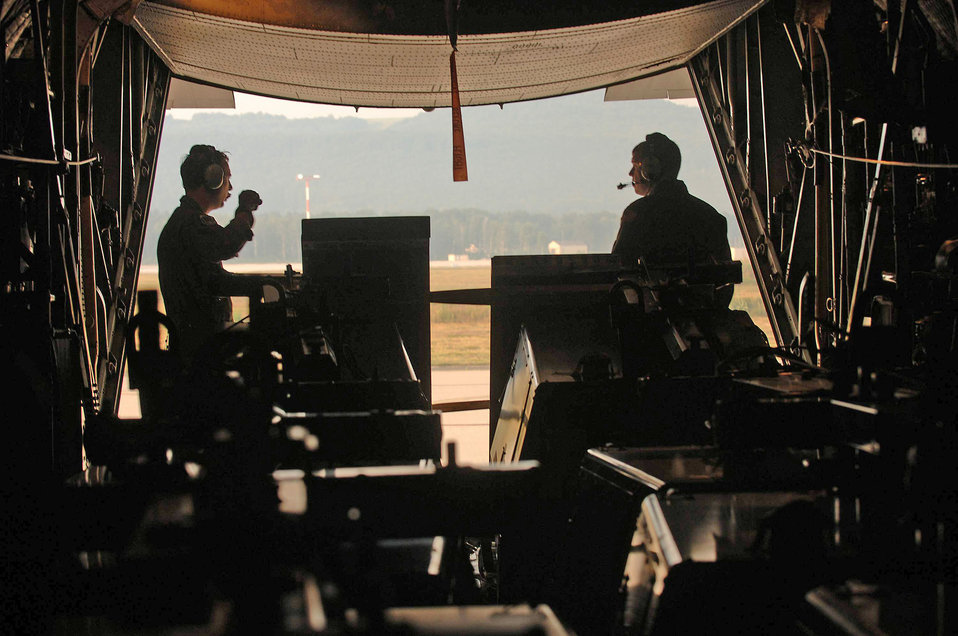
Airmen provide presidential support in Moscow

Staff Sgt. Samuel Yearber and Senior Airman Glenn Scott prepare for takeoff on a C-130 Hercules to transport 10 portable light carts to Moscow's Vnukovo International Airport in preparation for President Barack Obama's scheduled visit to Russia July 3 from Ramstein Air Base, Germany. Sergeant Yearber and Airman Scott are C-130 loadmasters.